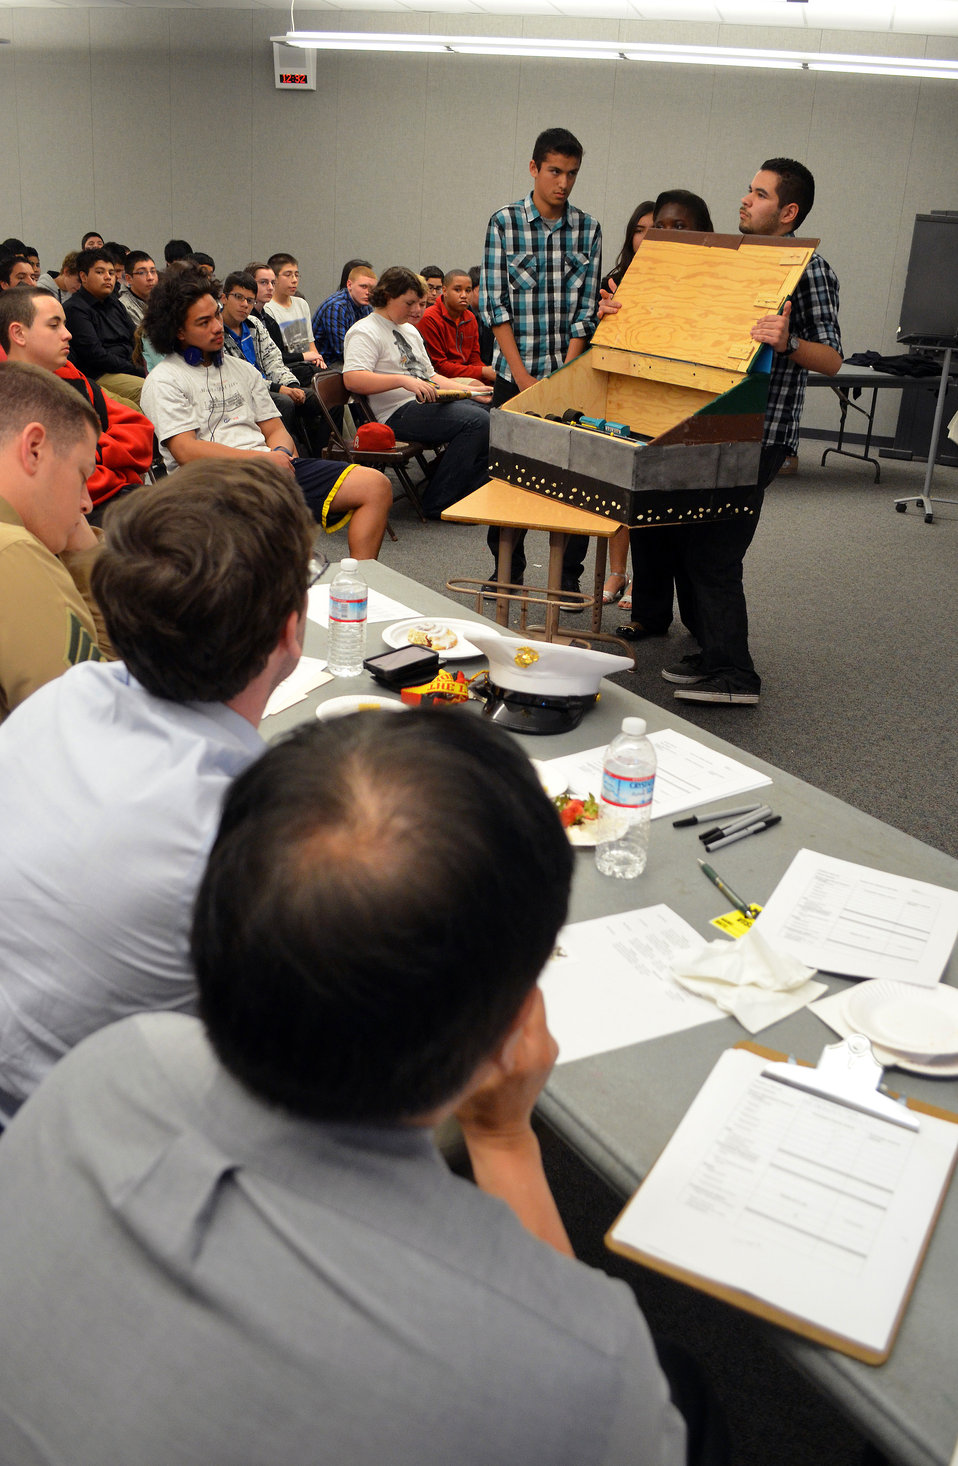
District Engineers judge students ‘Modern Marvels’ projects

Engineers from the U.S. Army Corps of Engineers Sacramento District judge a student project during the ‘Modern Marvels’ competition at Antioch High School in Antioch, Calif., Feb. 19, 2014.

The engineers used their varied fields of expertise – electrical, mechanical and structural – to help judge projects and guide students on future endeavors. The week-long student presentations included scaled models and slideshow presentations of significant engineering feats.